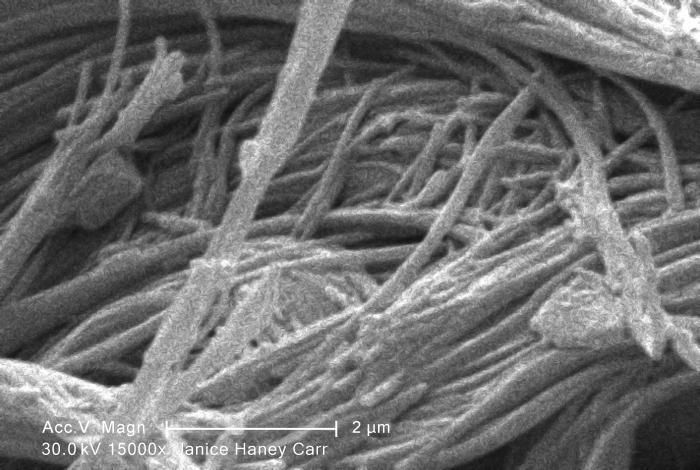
Under a very high magnification of 15000X, this scanning electron micrograph (SEM) revealed some of the microcrystalline ultrastructure exhibited by a piece of raw chrysotile, or white asbestos, which had been excavated from the Lowell Asbestos Mine on Belvidere Mountain, Vermont.